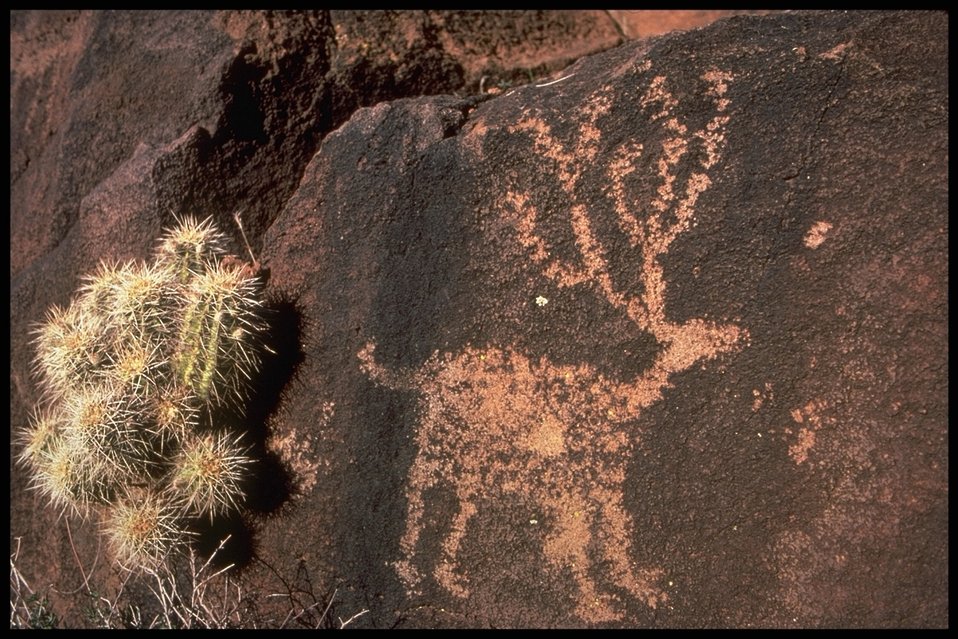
There are ancient petroglyphs all over the Agua Fria National Monument.